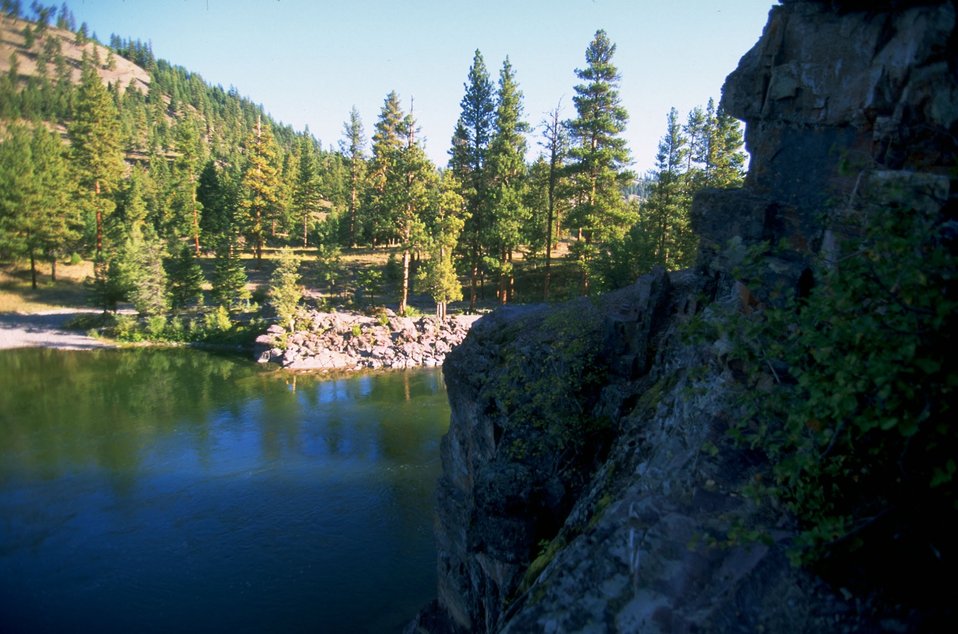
Red Rocks day use area on Blackfoot River